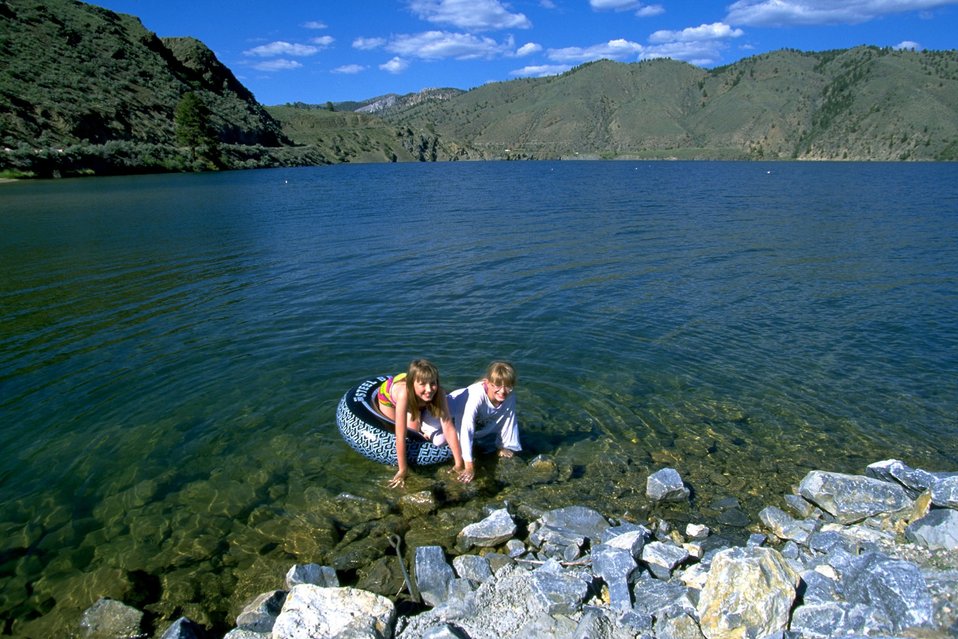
Girls coming ashore from playing in Hauser Lake